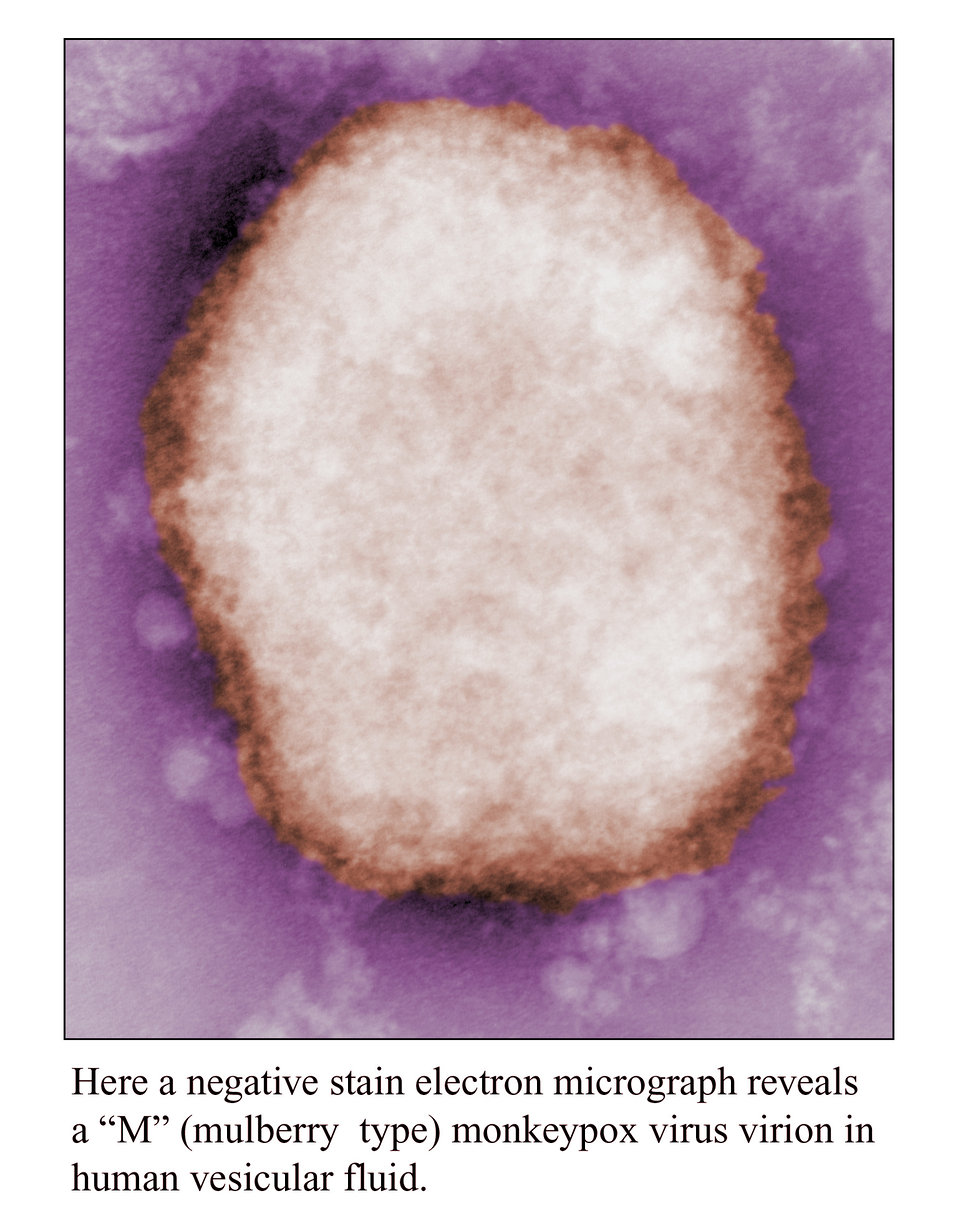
Here a negative stain electron micrograph reveals a 'M' (mulberry type) monkeypox virus virion in human vesicular fluid. See PHIL 3945 for a black and white version of this image.